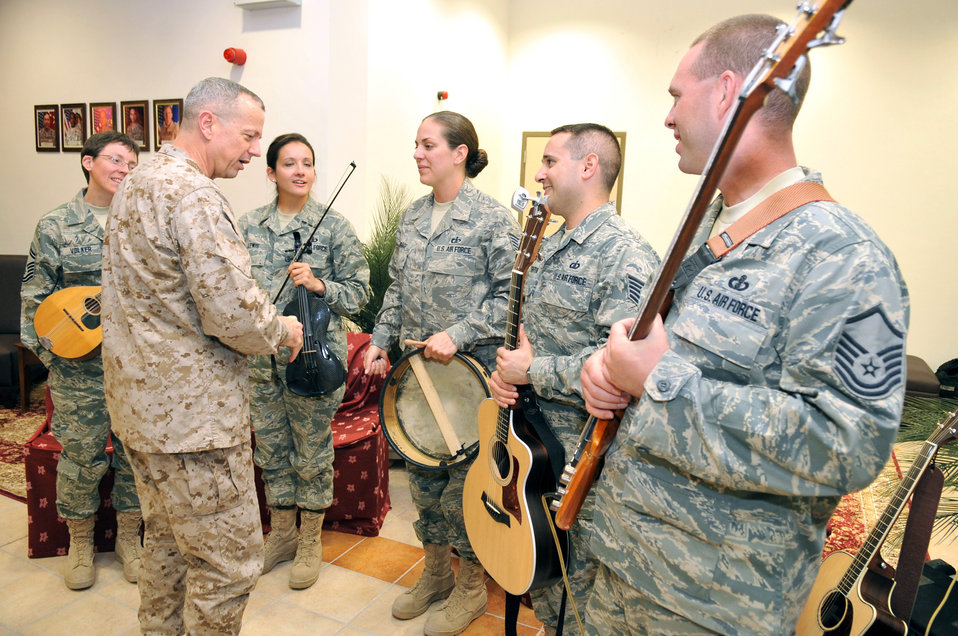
U.S. Air Forces Central Expeditionary Band

Members of Celtic Aire meet with Lt. Gen. John R. Allen, Deputy Commander of U.S. Central Command, after a performance. Members of Celtic Aire include (left to right) Senior Master Sgt. Deb Volker, Tech. Sgts. Emily Lewis, Julia Brundage and Joe Haughton, and Master Sgt. Eric Sullivan. The deployment was part of the mission of the U.S. Air Forces Central Expeditionary Band. Based in Southwest Asia, the band is composed of deployed Airmen from active duty, Reserve and Air National Guard bands.